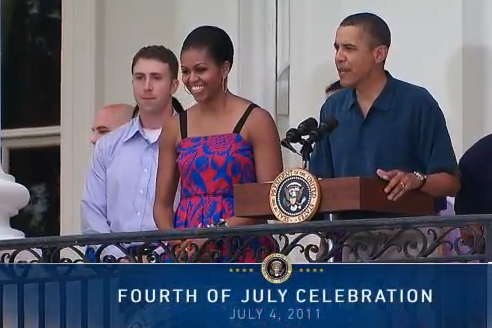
President praises troops during Independence Day event

President Barack Obama, accompanied by First Lady Michelle Obama and Army Sgt. 1st Class Justin Gang, speaks to troops and family members at an Independence Day event at the White House, July 4, 2011.